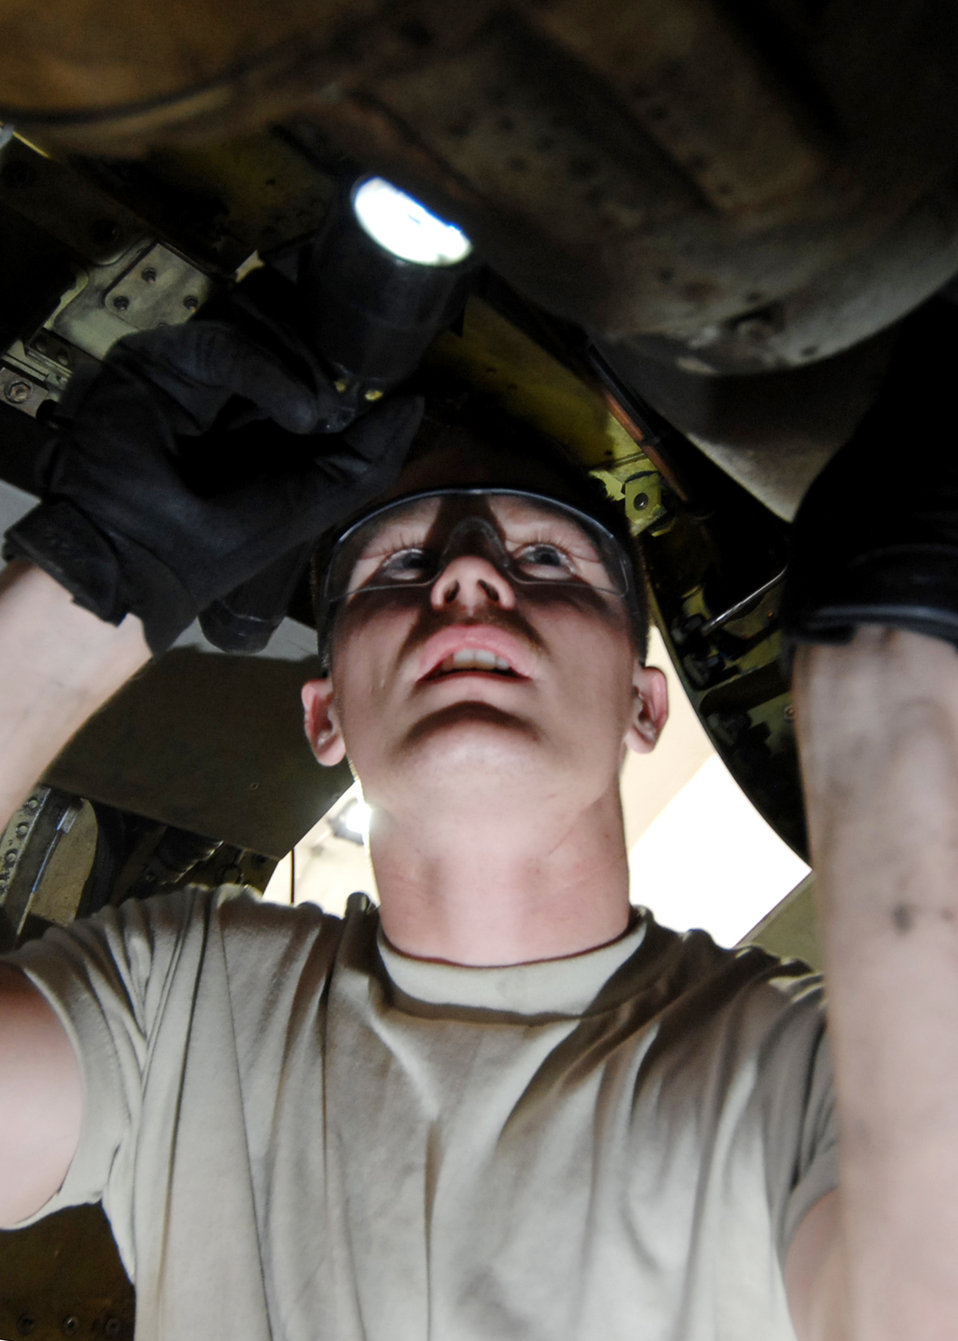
Balad maintainers keep F-16s flying

Airman Travis Sharp inspects the lower fuselage of an F-16 Fighting Falcon Oct. 20, 2009, at Joint Base Balad, Iraq. Airman Sharp is deployed from Spangdahlem Air Base, Germany, and is assigned to the 332nd Expeditionary Maintenance Squadron.